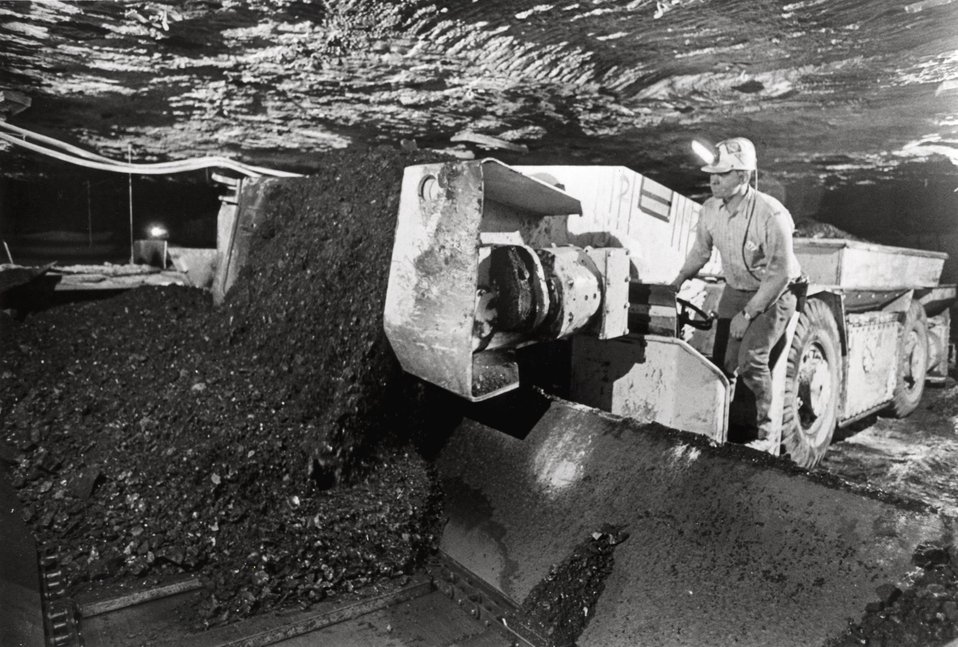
At a modern underground coal mine, an electric-powered truck, called a shuttle car, dumps its load of coal into a feeder bin which will load the fuel onto a conveyor belt or mine cars for the trip out of the mine. c. 1972